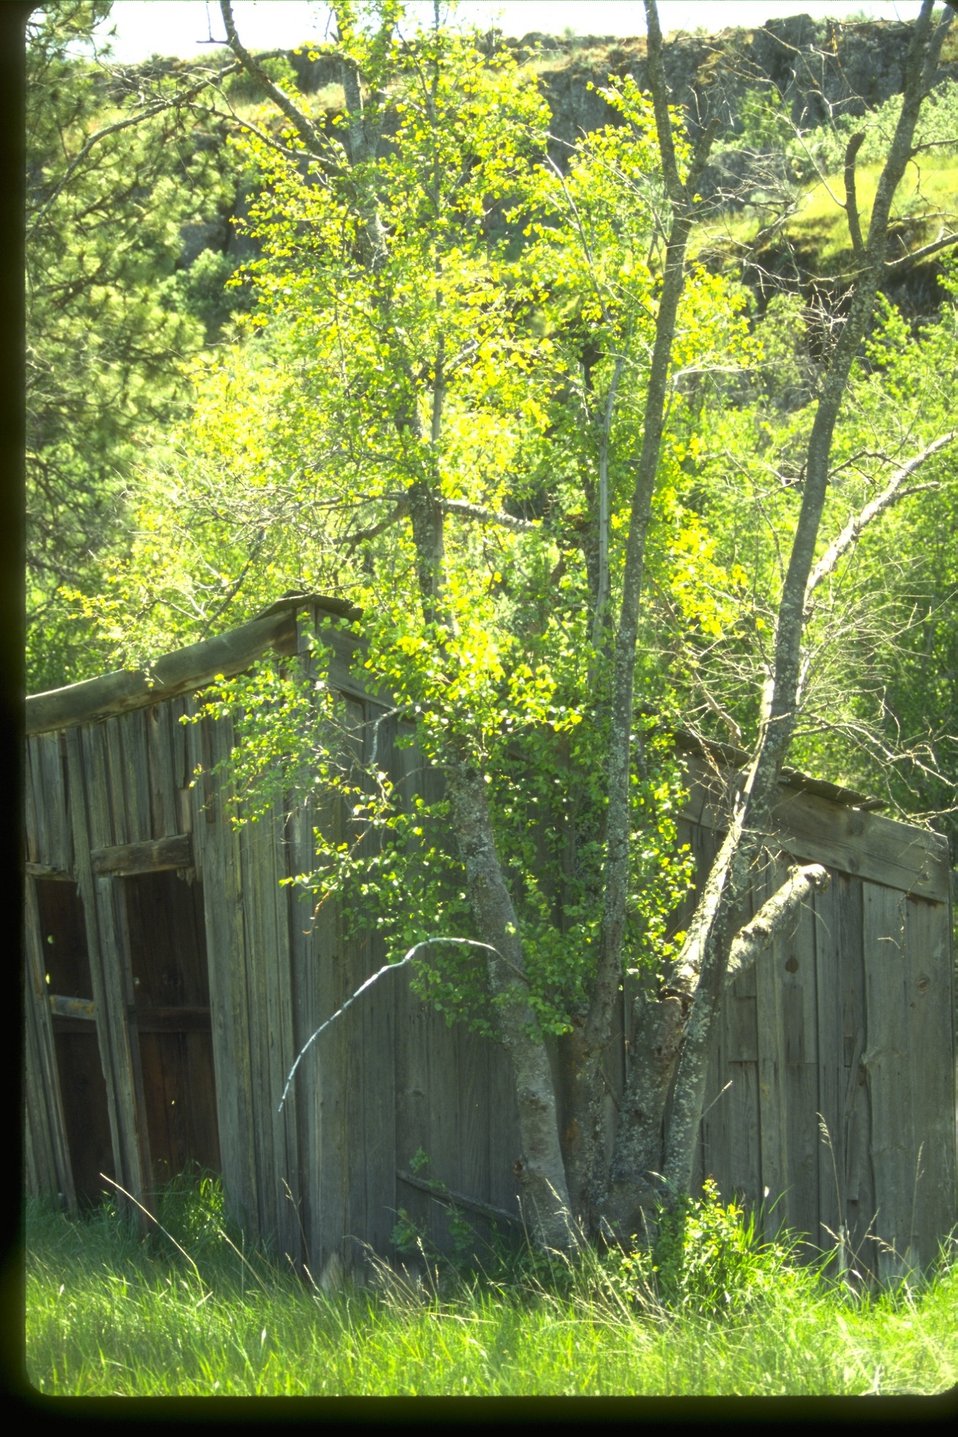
Historic structure at homestead site in Twin Lakes Management Area, Lincoln County, Washington.